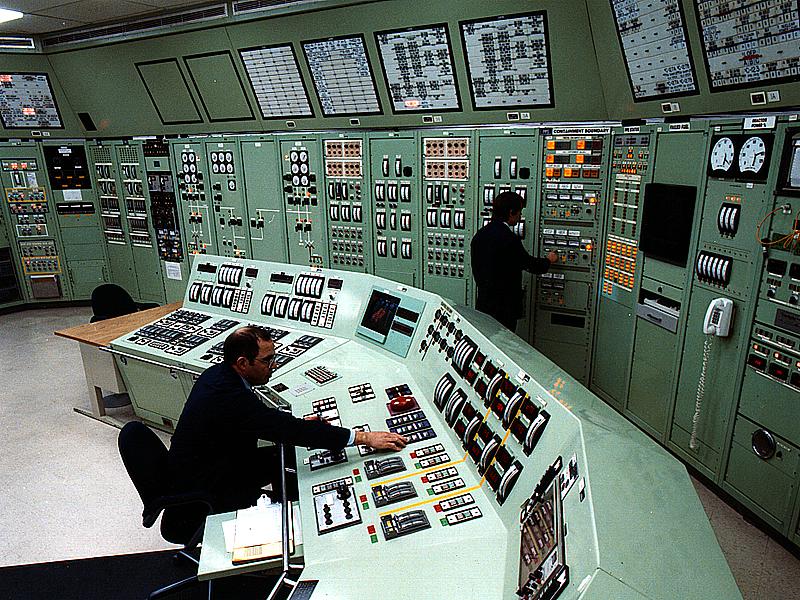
THE FAST FLUX TEST FACILITY CONTROL ROOM.

THE FAST FLUX TEST FACILITY AT DOE'S HANFORD SITE IN RICHLAND, WASHINGTON IS AN INTEGRATED PLANT COMPLEX WHICH INCLUDES A 400-MEGAWATT (THERMAL) SODIUM-COOLED REACTOR AND ITS IMMEDIATE SUPPORT EQUIPMENT AND FACILITIES. IT WAS DESIGNED SPECIFICALLY FOR IRRADIATION TESTING OF FUELS, MATERIALS, AND COMPONENTS FOR BREEDER REACTOR SYSTEMS. AFTER A COMPREHENSIVE REVIEW IT WAS ANNOUNCED ON DECEMBER 19, 2001 THAT DOE WILL PROCEED WITH THE DEACTIVATION OF THE FACILITY.